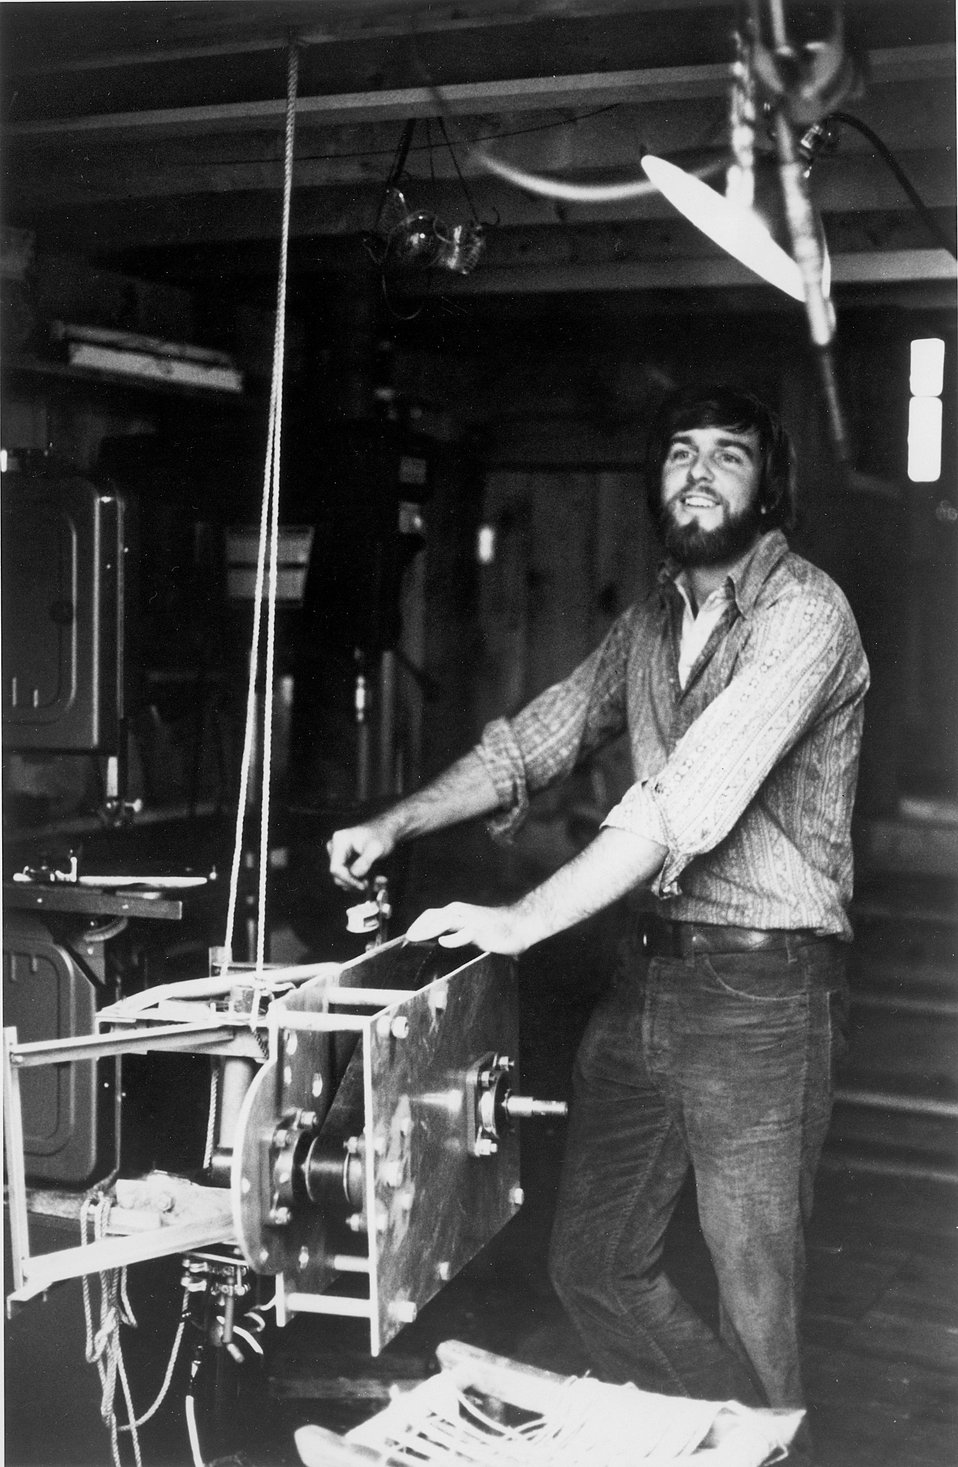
When Henry Clews moved his family to a Maine hilltop in 1973, the power company wanted $3,000 to hook him up. Instead Clews set up two wind-driven generators. Clews can produce 250 kilowatt hours a month -- more than enough to to run his 12 lights, television, phonograph, vacuum cleaner, typewriter, water pump, and well-equipped tool room. c. undated